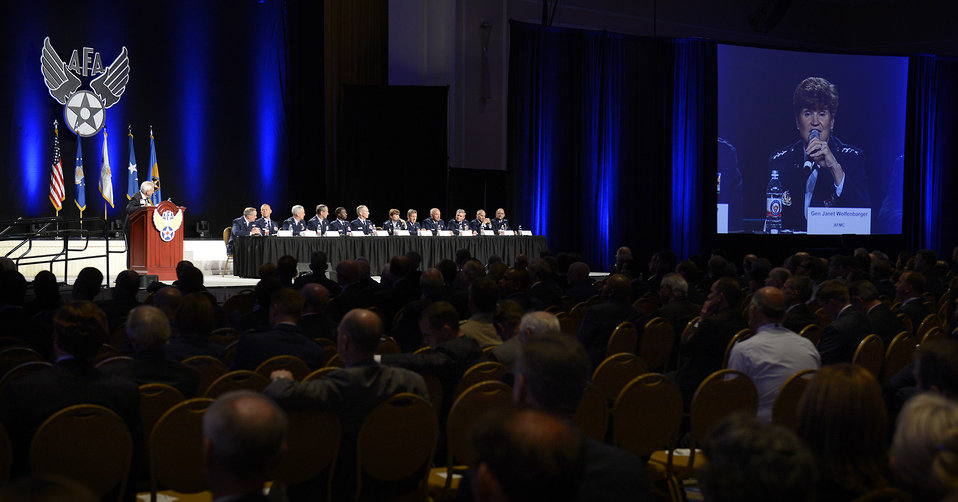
Air Force leaders offer perspectives at four-star forum

Air Force senior leaders discuss issues affecting the service during a 12-member panel at the Air Force Association's Air and Space Conference and Technology Exposition in Washington, D.C., Sept. 19, 2012.